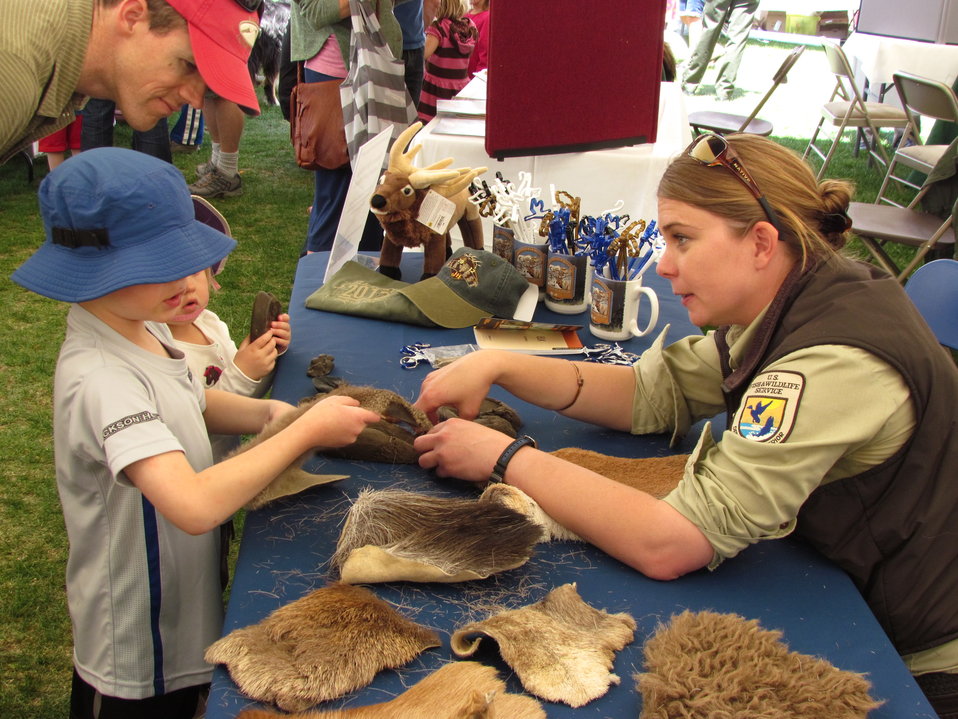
Making Connections at the EcoFair

National Elk Refuge visitor services and volunteer coordinator, Natalie Fath, staffed a booth at the EcoFair, held in Jackson, Wyoming's Powderhorn Park on Saturday, May 12, 2012. The educational booth was filled with hands-on activities for EcoFair goers and gave staff an opportunity to share information about the National Elk Refuge's centennial.

Credit: USFWS / Steve Miller, National Elk Refuge volunteer